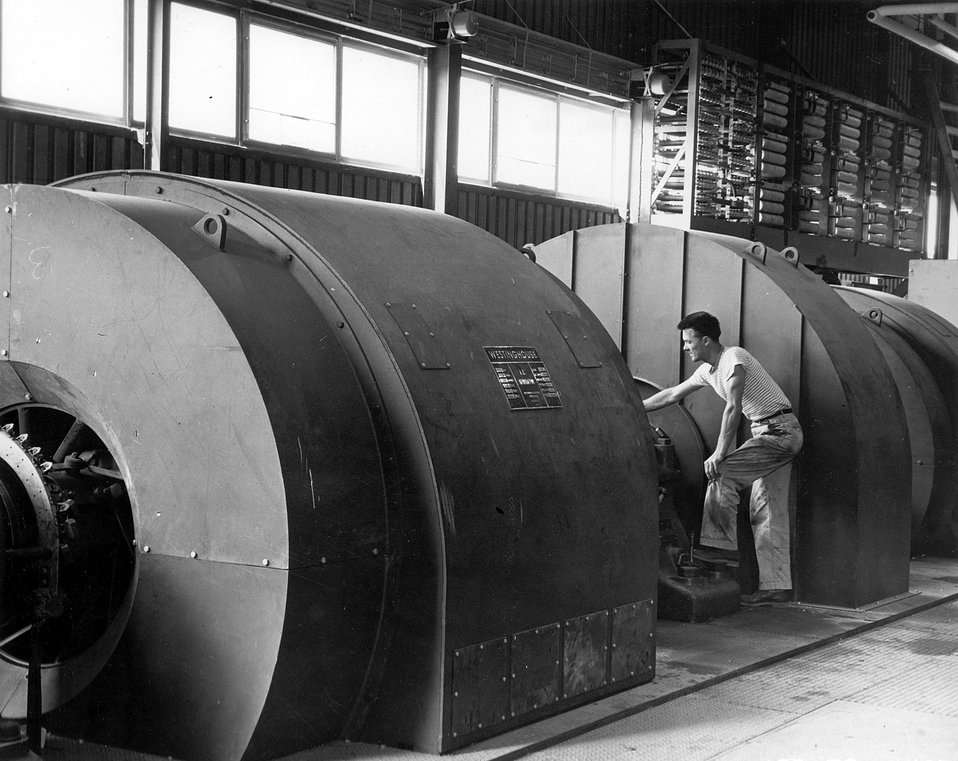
Motor generator set which supplies 40 million watts of power to energize
the giant magnet of the Cosmotron at the Brookhaven National Laboratory,
Upton, New York. The set is a 21,000 KVA unit.